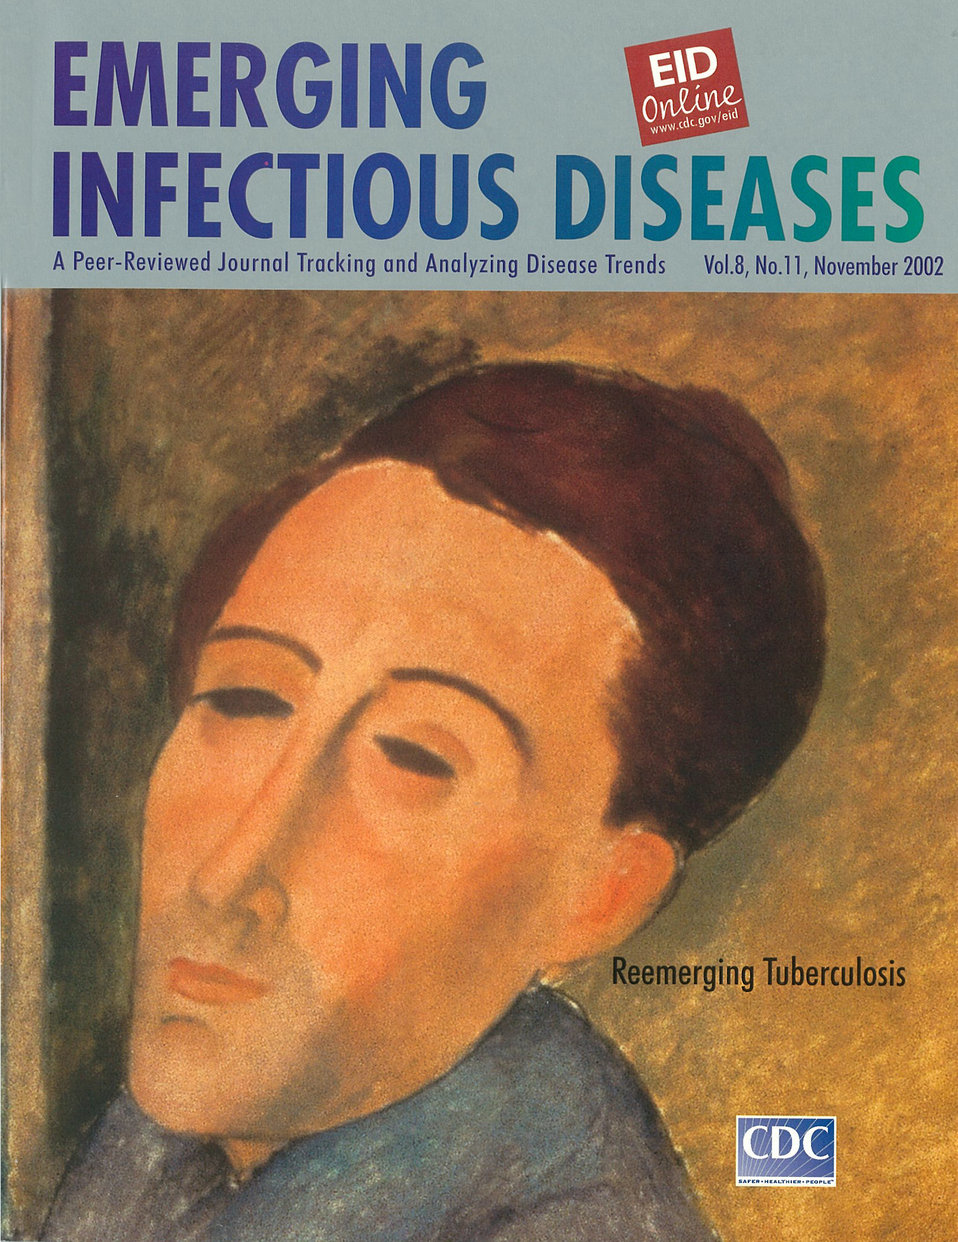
Emerging Infectious Diseases (EID) cover artwork for Volume 8, Number 11, November 2002 issue.